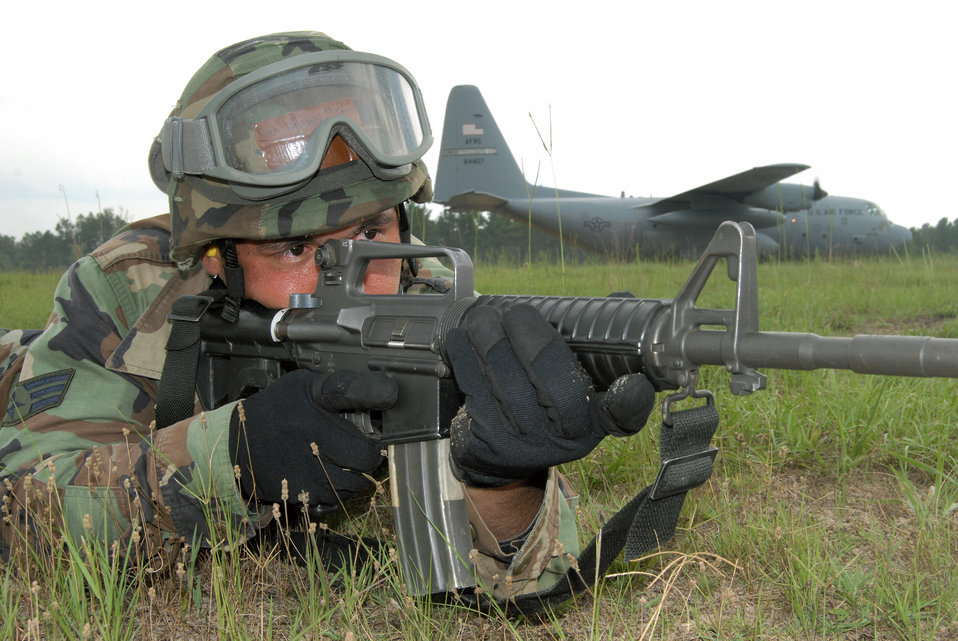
Pope's AES trains Travis Airmen for deployment

Senior Airman Vaughn Mccallum provides defense for an aircraft preparing to take off during mobile aeromedical staging facility training at Fort Bragg's Camp Mackall, N.C., July 10. Airman Mccallum is assigned to the 43rd Aeromedical Evacuation Squadron at Pope Air Force Base, N.C.